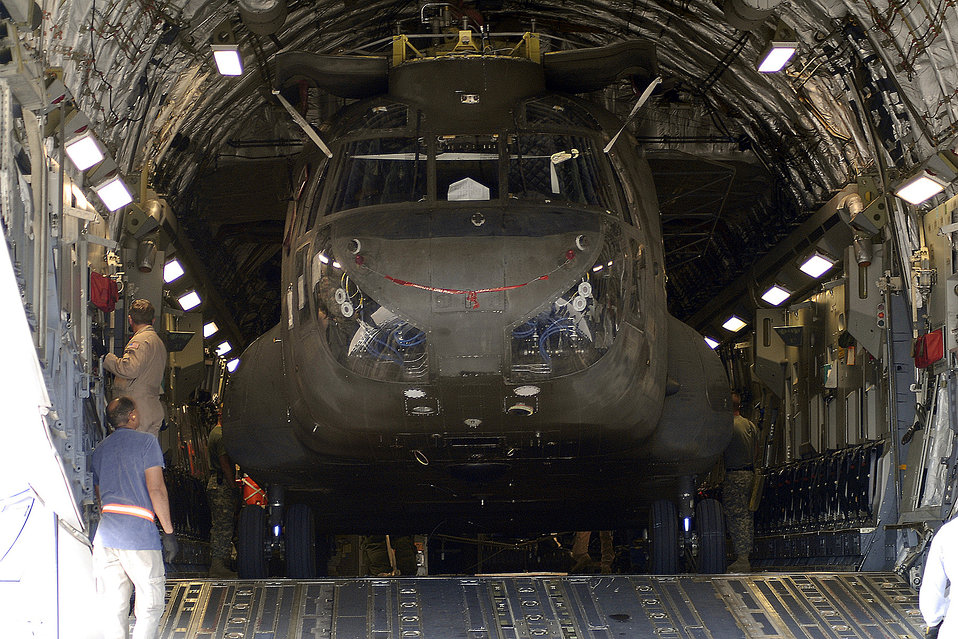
Chinook shipment a joint effort by Army, Air Force

A Chinook CH-47D resides in the cargo bay of a C-17 Globemaster III awaiting overseas deployment Aug. 30 at Peterson Air Force Base, Colo. Employees from Sikorsky Support Services Inc., the 3rd Battalion of the 126th General Support Aviation Battalion, and National Guard units from New York and Maryland loaded the aircraft for overseas deployment.